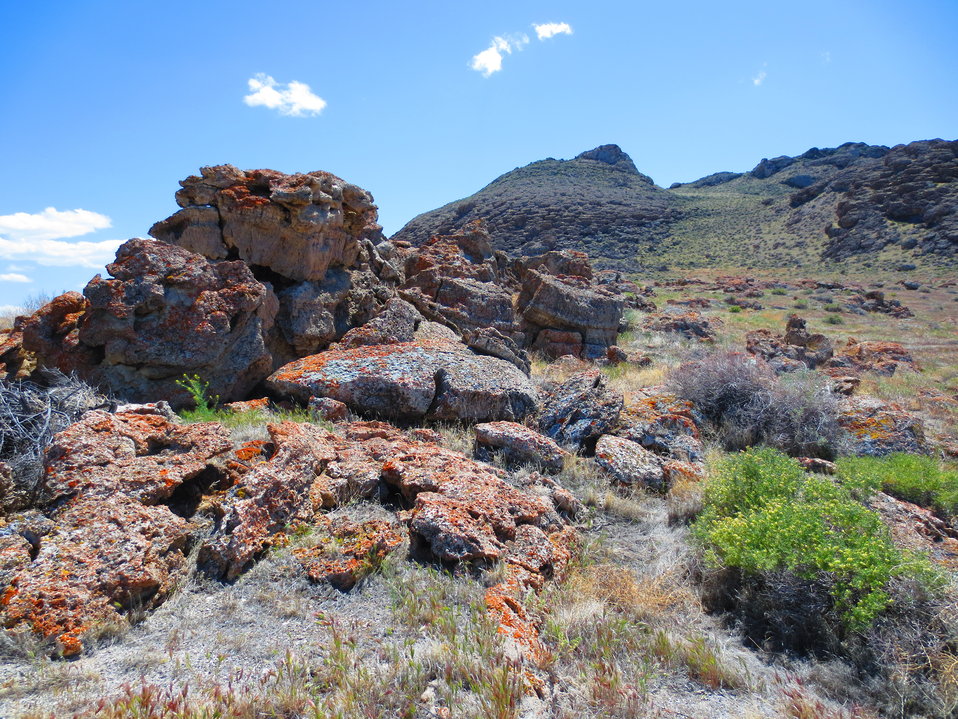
Anaho Island NWR

In order to protect nesting birds Anaho Island NWR is closed to the public.